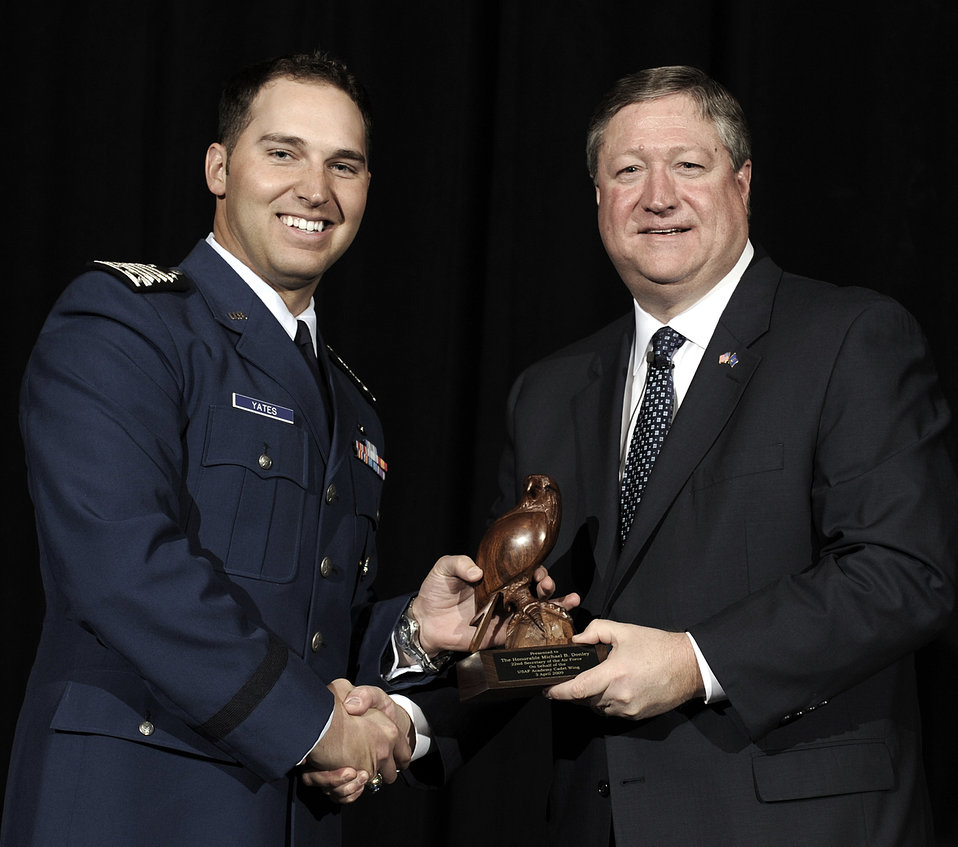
'Visions of Valor' portraits honor heroes

Secretary of the Air Force Michael B. Donley accepts